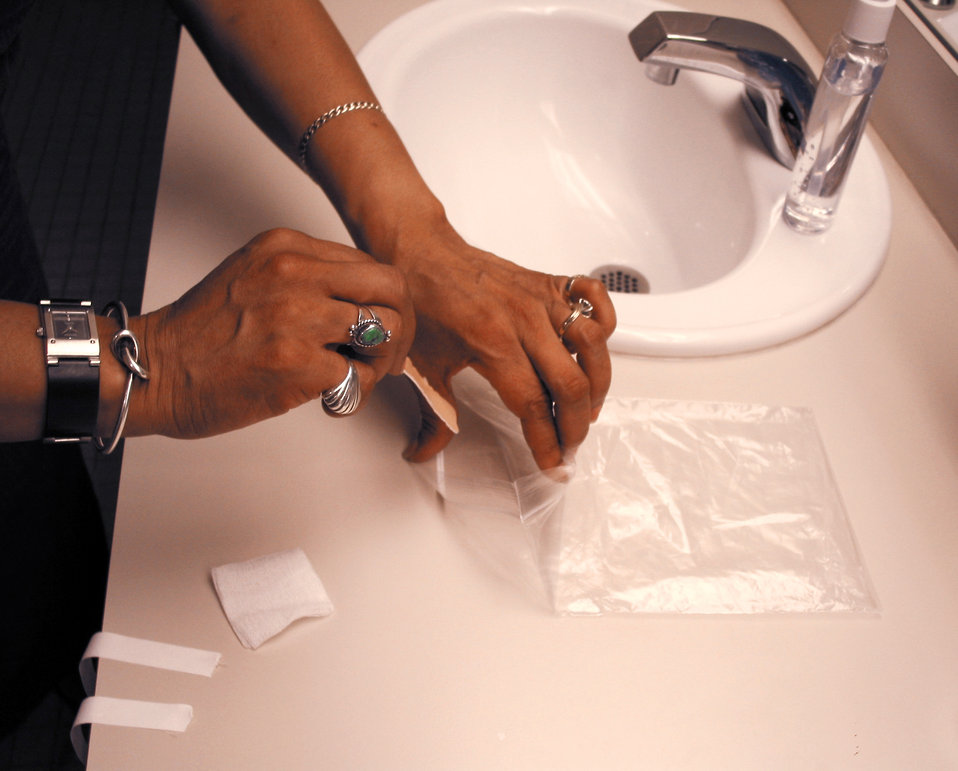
This smallpox vaccinee is shown here placing a contaminated waterproof bandage into a sealable plastic bag.